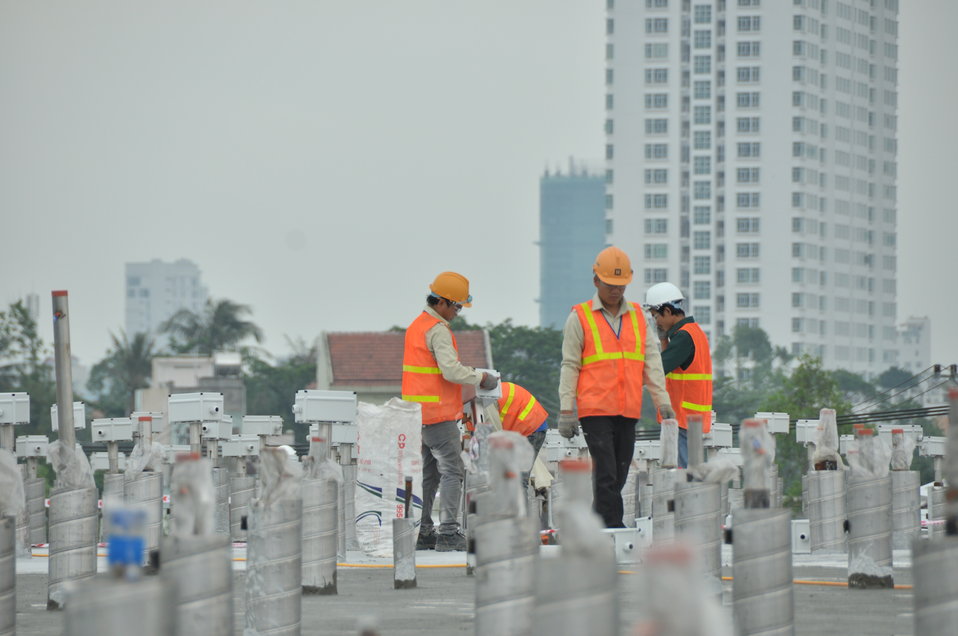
USAID Dioxin Contamination Project Progress: Containment Structure

Progress at the Environmental Remediation of Dioxin Contamination Project at the Danang Airport

December 4, 2013